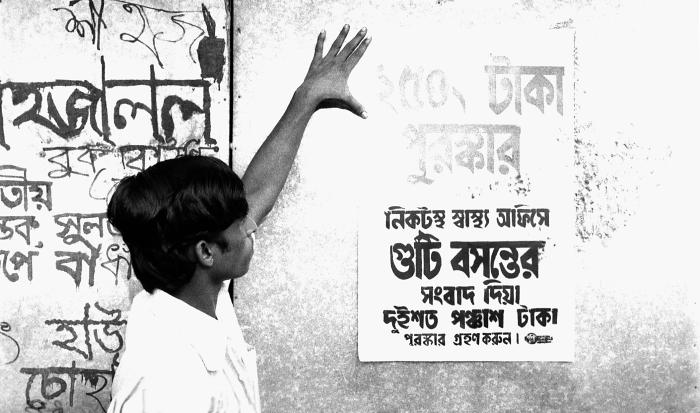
Rewards were given to those residents who had reported suspected smallpox cases that were confirmed by an epidemiologist. This sign was displaying the message announcing a 250 Taka reward for reporting such a case.